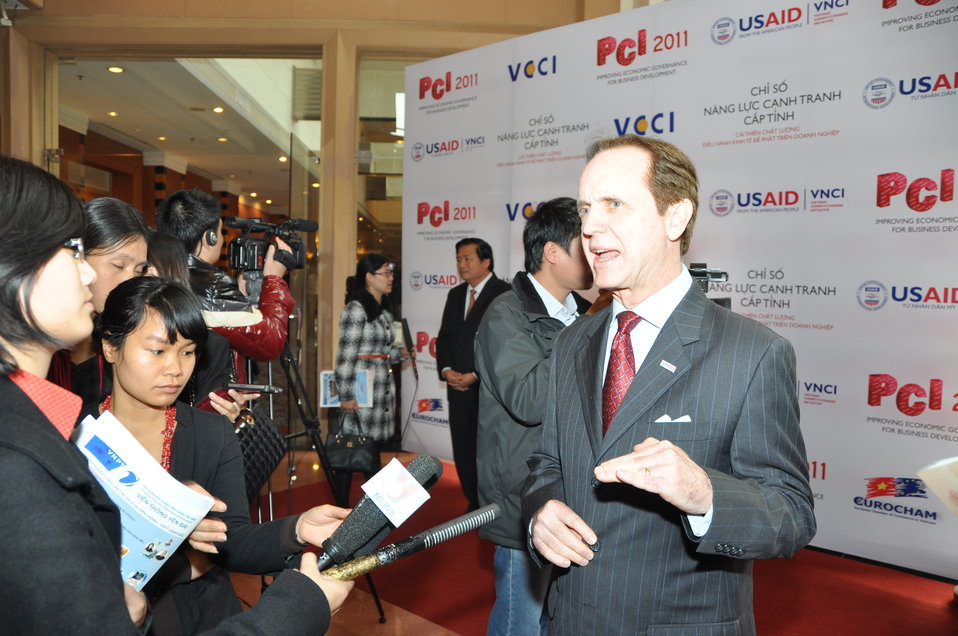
USAID Mission Director Francis Donovan at the Provincial Competitiveness Index 2011 Launch